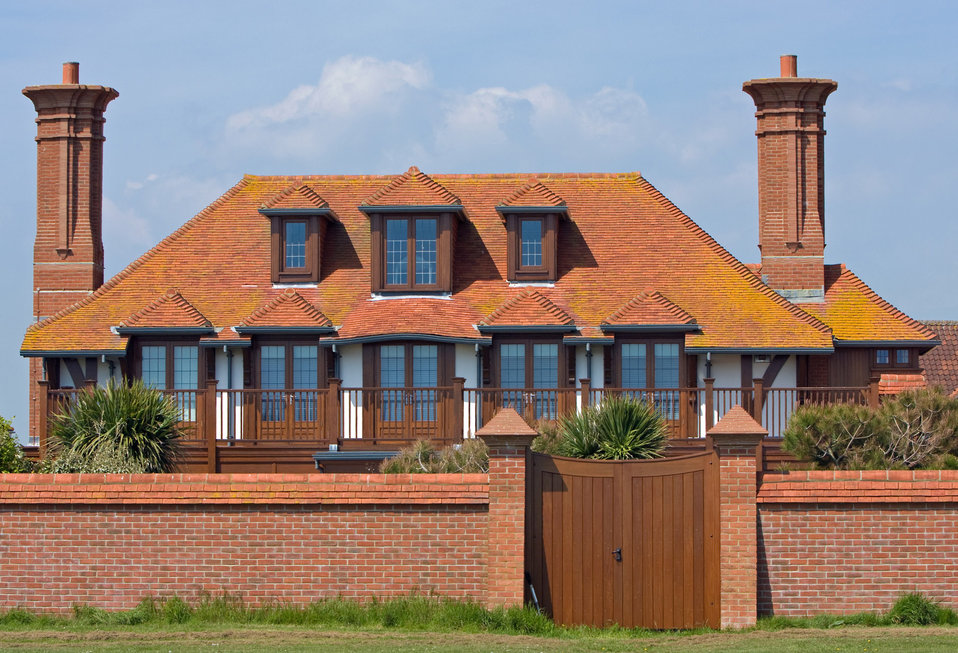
Luxury house, home made of red brick against a blue sky.